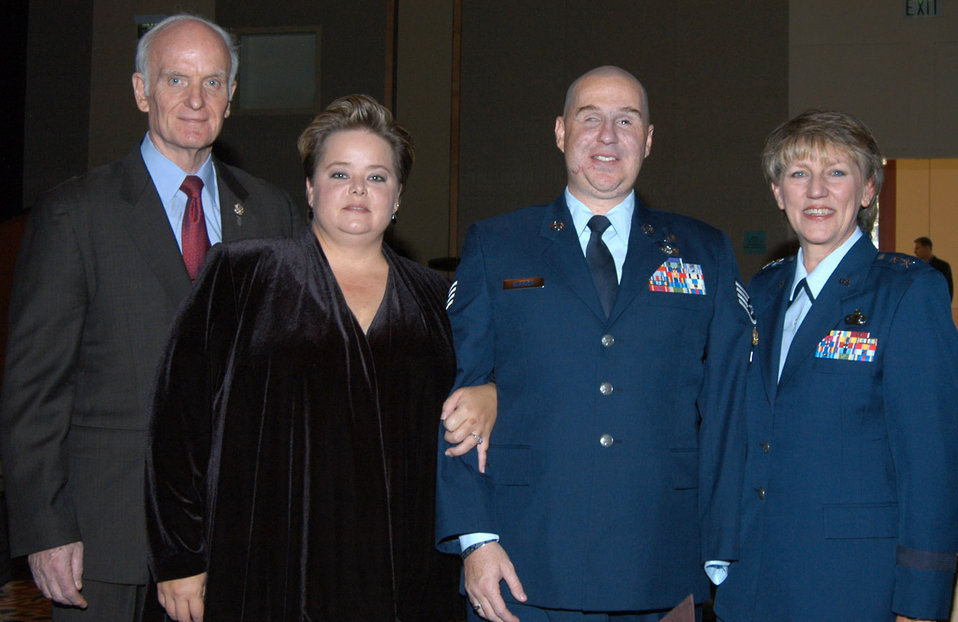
AF holds first manpower, personnel, services worldwide conference

Mr. Art Myers, Air Force Services director, Mrs. Annette Slaydon, wife of Staff Sgt. Matt Slaydon, Air Force Wounded Warrior special guest speaker, and Maj. Gen. K.C. McClain, Air Force Personnel Center commander, stand for a photo at the 2008 Manpower, Personnel and Services Worldwide Conference in Keystone, Colo..